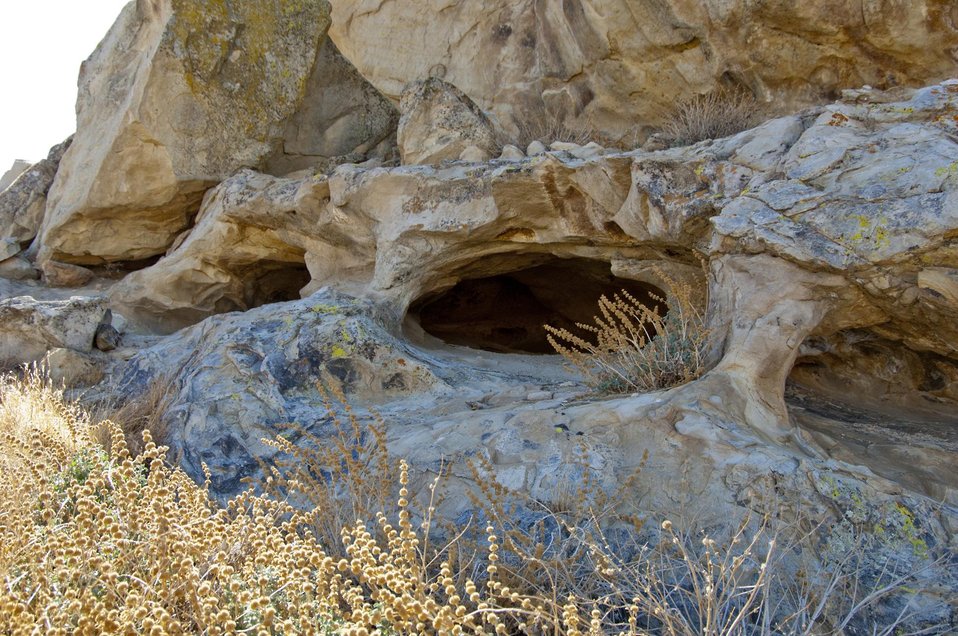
Painted Rock, Formation on the Carrizo Plain 4